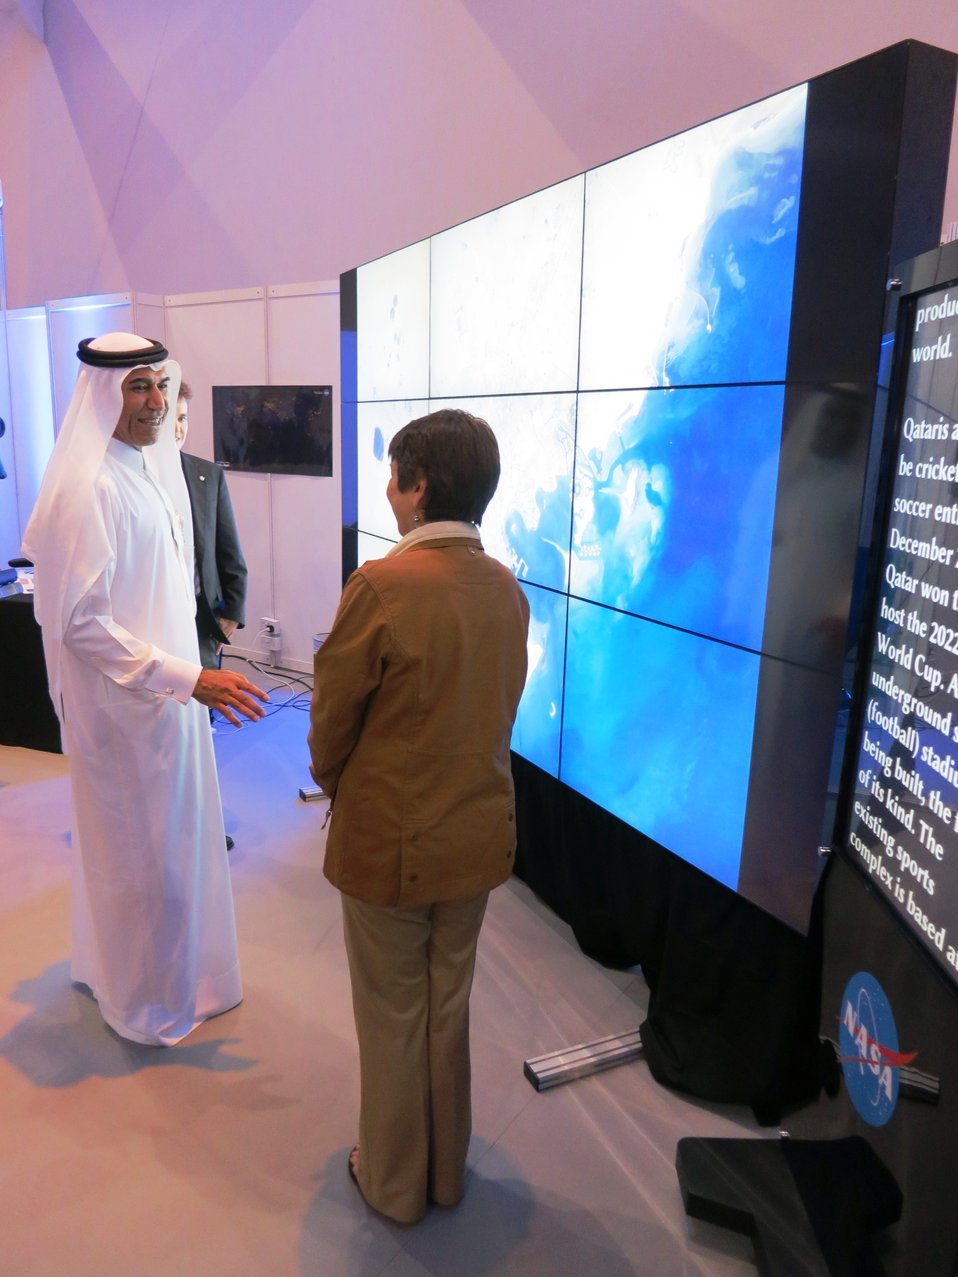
COP-18's Project Manager Speaks With Coordinator Gates

Project Manager of the 18th Session of the Conference of the Parties to the UN Framework Convention on Climate Change (COP-18) speaks with Isabel Gates, Conference Coordinator of the U.S. Center, about NASA's powerful Hyperwall data visualizations video panel wall at the U.S. Center in Doha, Qatar, November 29, 2012.